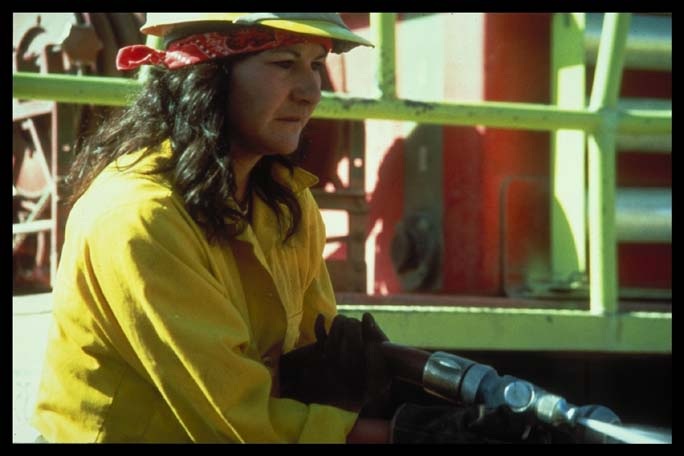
Engine crewmember